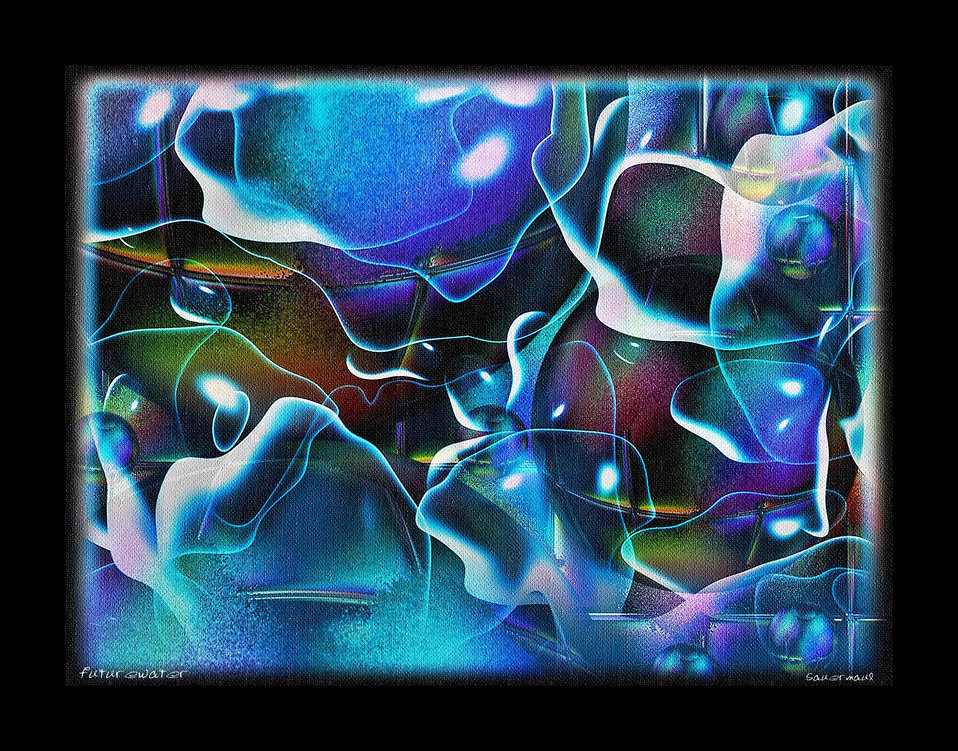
Future water

Water is the future.